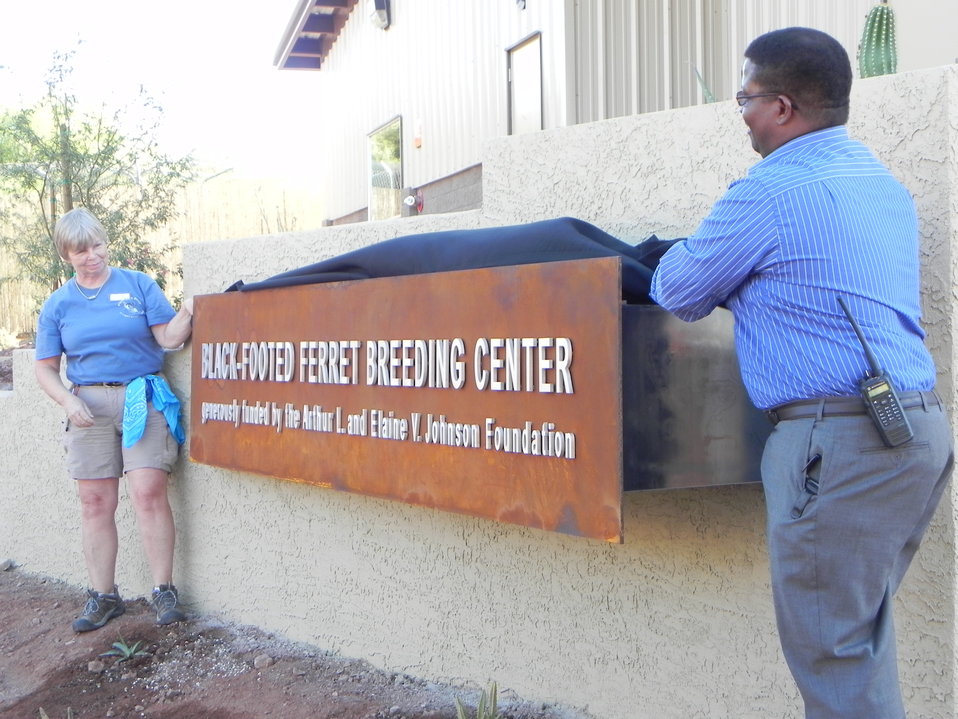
Dedication and Sign

Dedication of Black-footed Ferret Breeding Center at The Phoenix Zoo 11/18/2010.